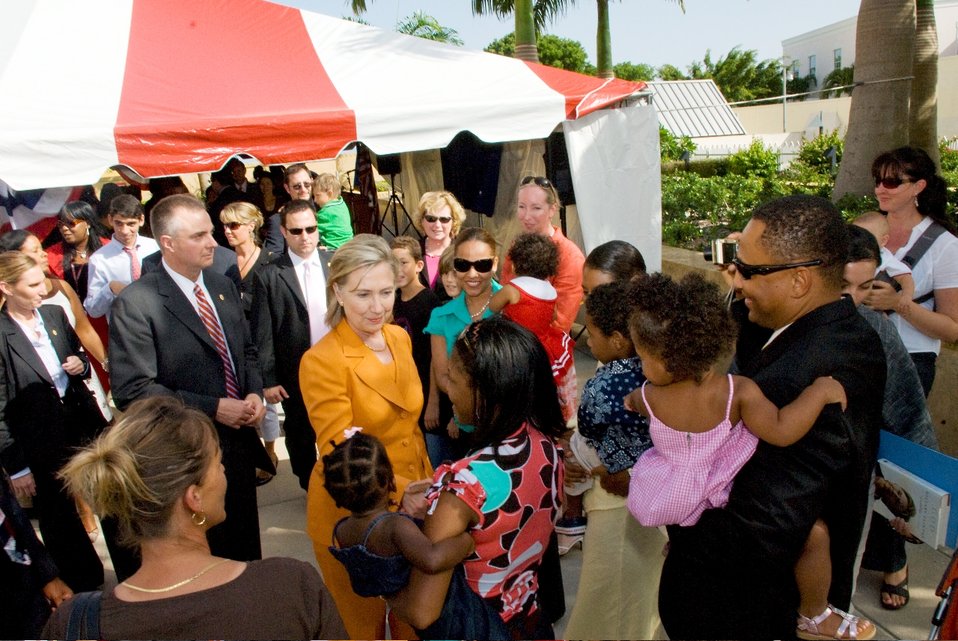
Secretary Clinton Meets With Embassy Staff and Families

U.S. Secretary of State Hillary Rodham Clinton visits the U.S. Embassy Bridgetown to meet with staff and families in Bridgetown, Barbados, on June 10, 2010.